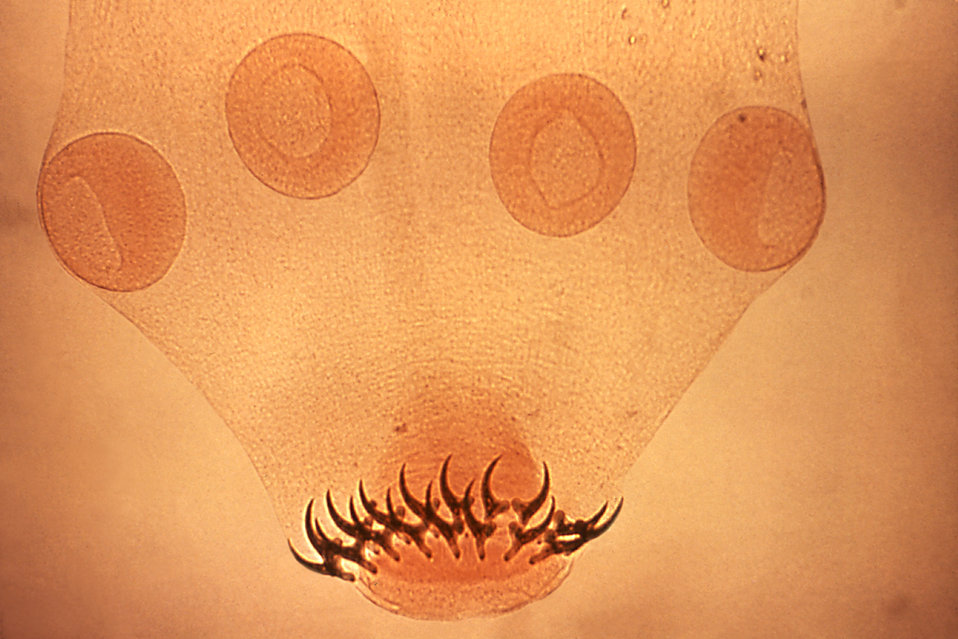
This micrograph reveals the morphology of a Taenia solium tapeworm scolex with its four suckers, and two rows of hooks.